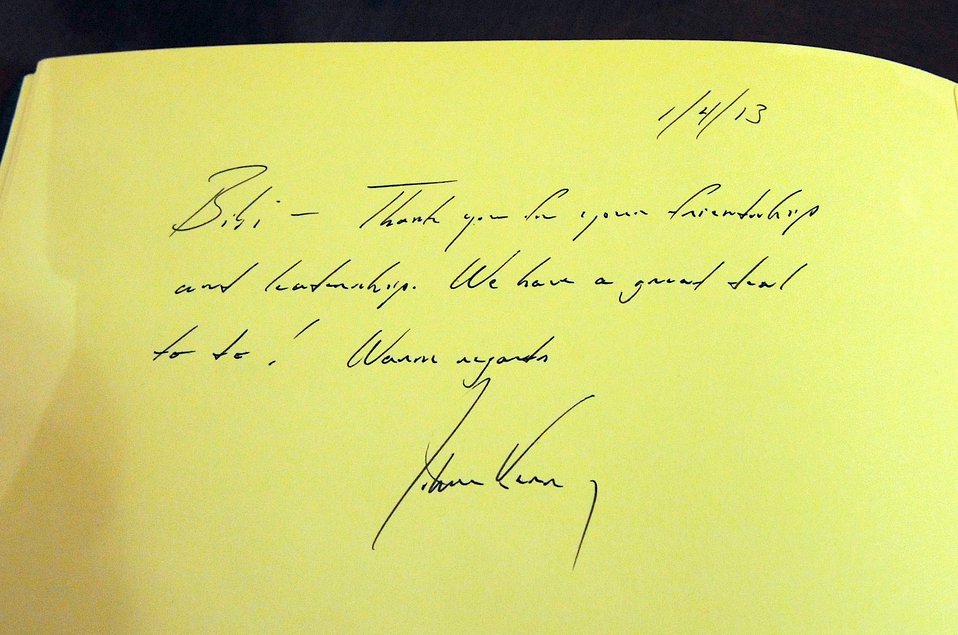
Secretary Kerry's Inscription on Israeli Prime Minister Netanyahu's Guest Book

The message left by U.S. Secretary of State John Kerry after he signed the guest book at the government residence of Israeli Prime Minister Benjamin Netanyahu in Jerusalem before a dinner meeting focused on Middle East peace on January 4, 2014.